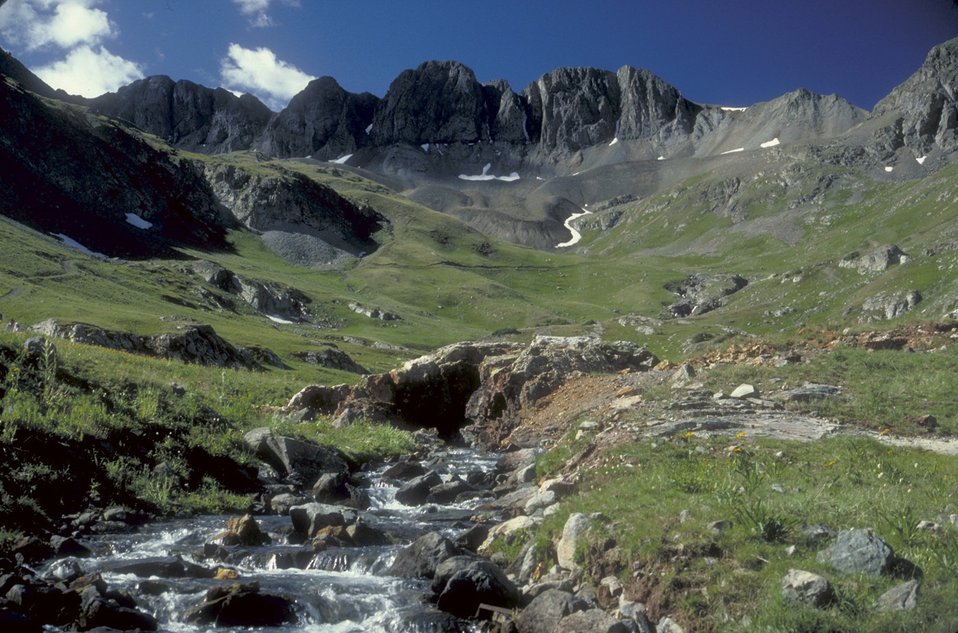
Lake Fork of the Gunnison River at trailhead to Sloans Lake in American Basin.